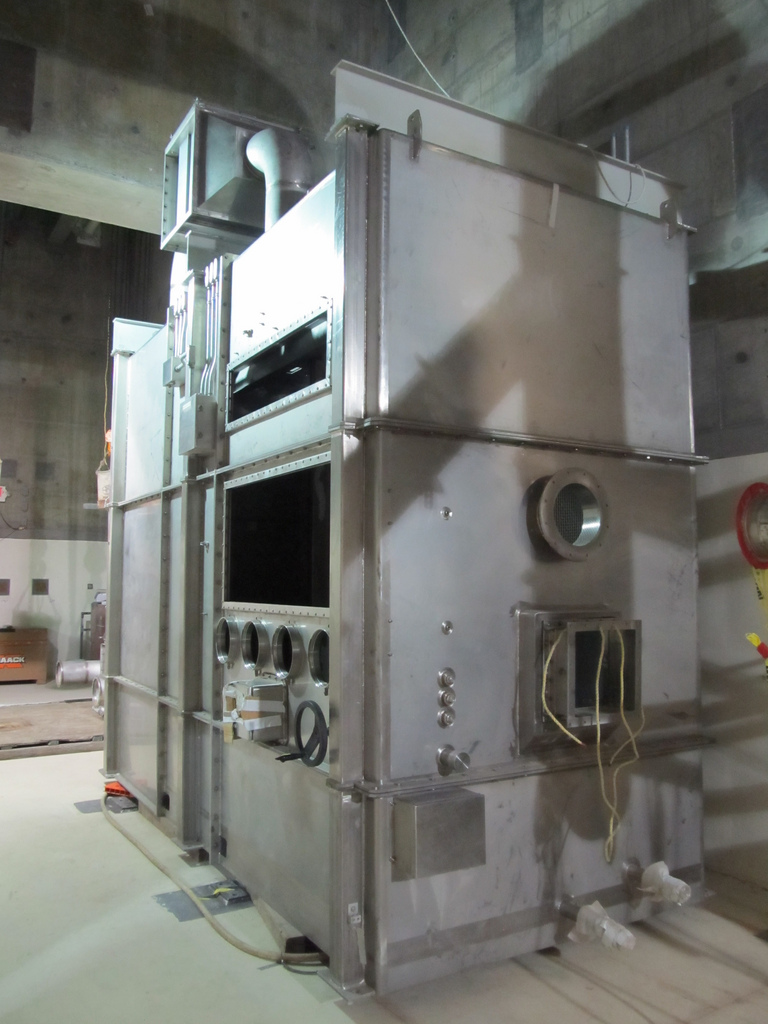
Hanford Waste Treatment Plant completes important mechanical installation in Pretreatment Facility.

The decontamination booth is the first significant piece of permanent plant requirement to be placed inside the Pretreatment Facility that is not required to support the civil construction progress.